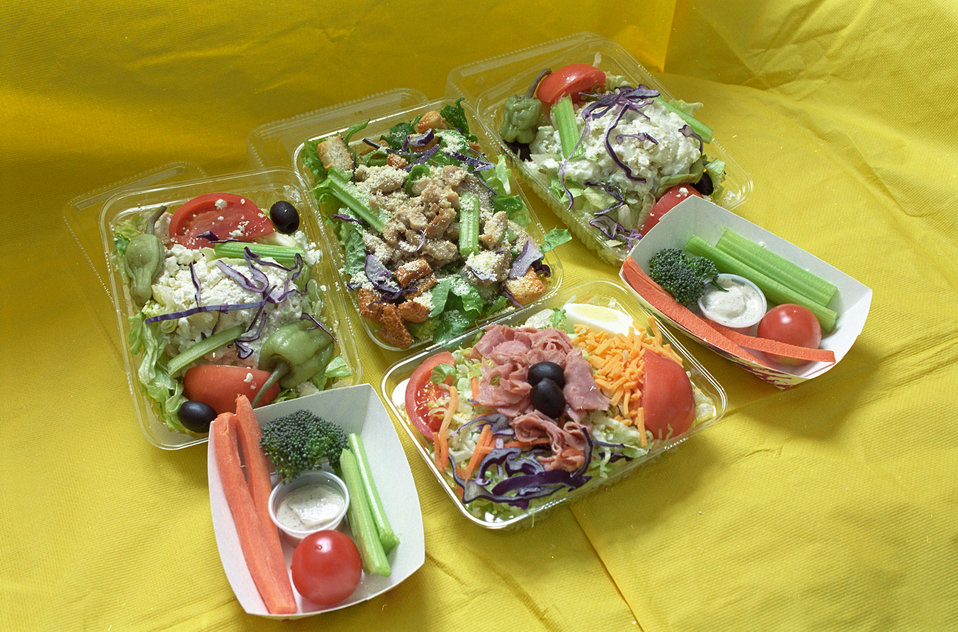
Nutritious and flavorful lunches and snacks are prepared at a school in St. Petersburg, FL on January 15, 2003. The U.S. Department of Agriculture's (USDA) Food and Nutrition Service (FNS) Fresh Fruit and Vegetable Program (FFVP) was introduced to schools in 2003. The FFVP provides all children in participating schools with a variety of free fresh fruits and vegetables throughout the school day. It is an effective and creative way of introducing fresh fruits and vegetables as healthy snack options. The FFVP also encourages schools to develop partnerships at the State and local level for support in implementing and operating the program. The Goal of the FFVP is to create healthier school environments by providing healthier food choices, expand the variety of fruits and vegetables children experience, increase children’s fruit and vegetable consumption, and make a difference in children’s diets to impact their present and future health.